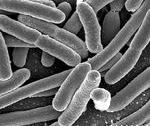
Bacteriarazorback